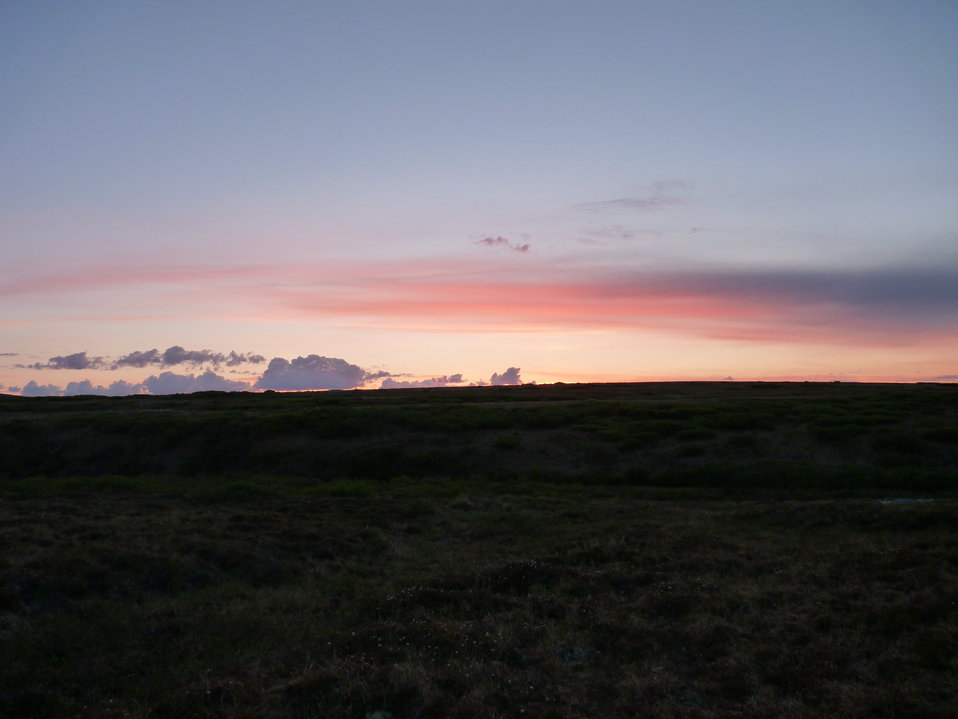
Sunset

Andreafsky Wilderness, Yukon Delta National Wildlife Refuge